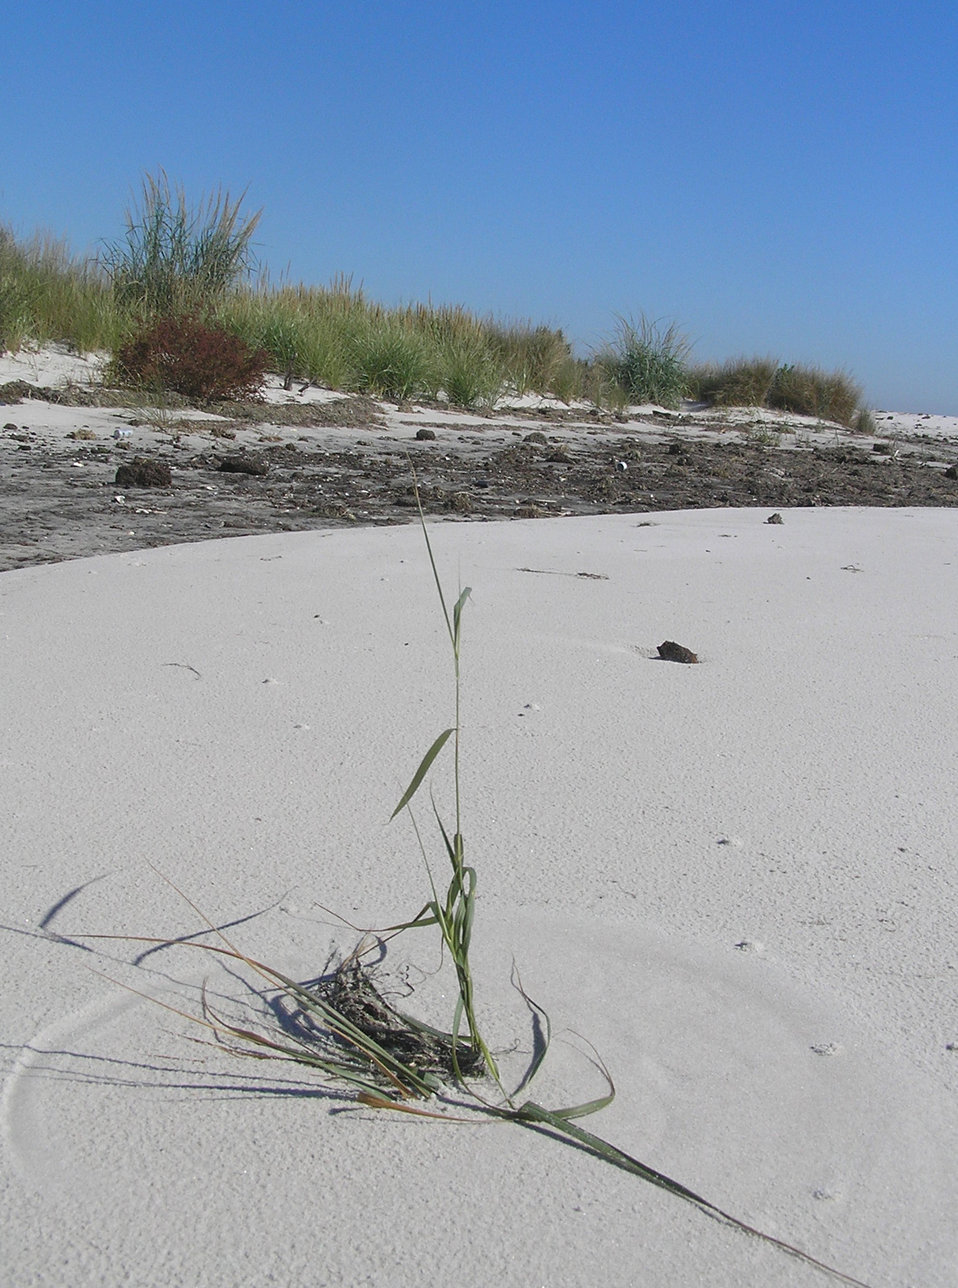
Shoreline

Plum Tree Island National Wildlife Refuge, VA.